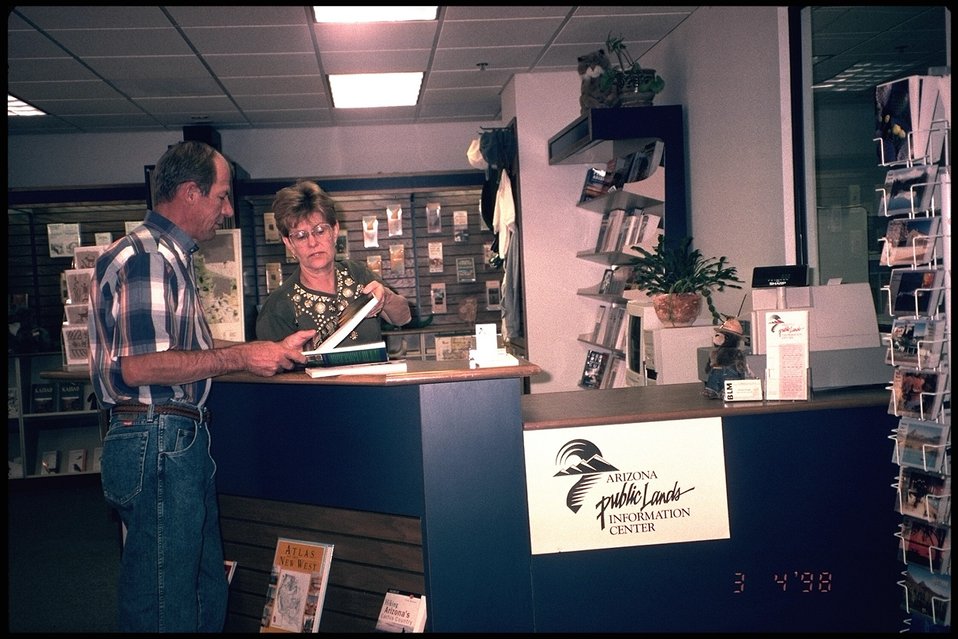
PLIC Manager, Joanna Scruggs shares information on public lands.